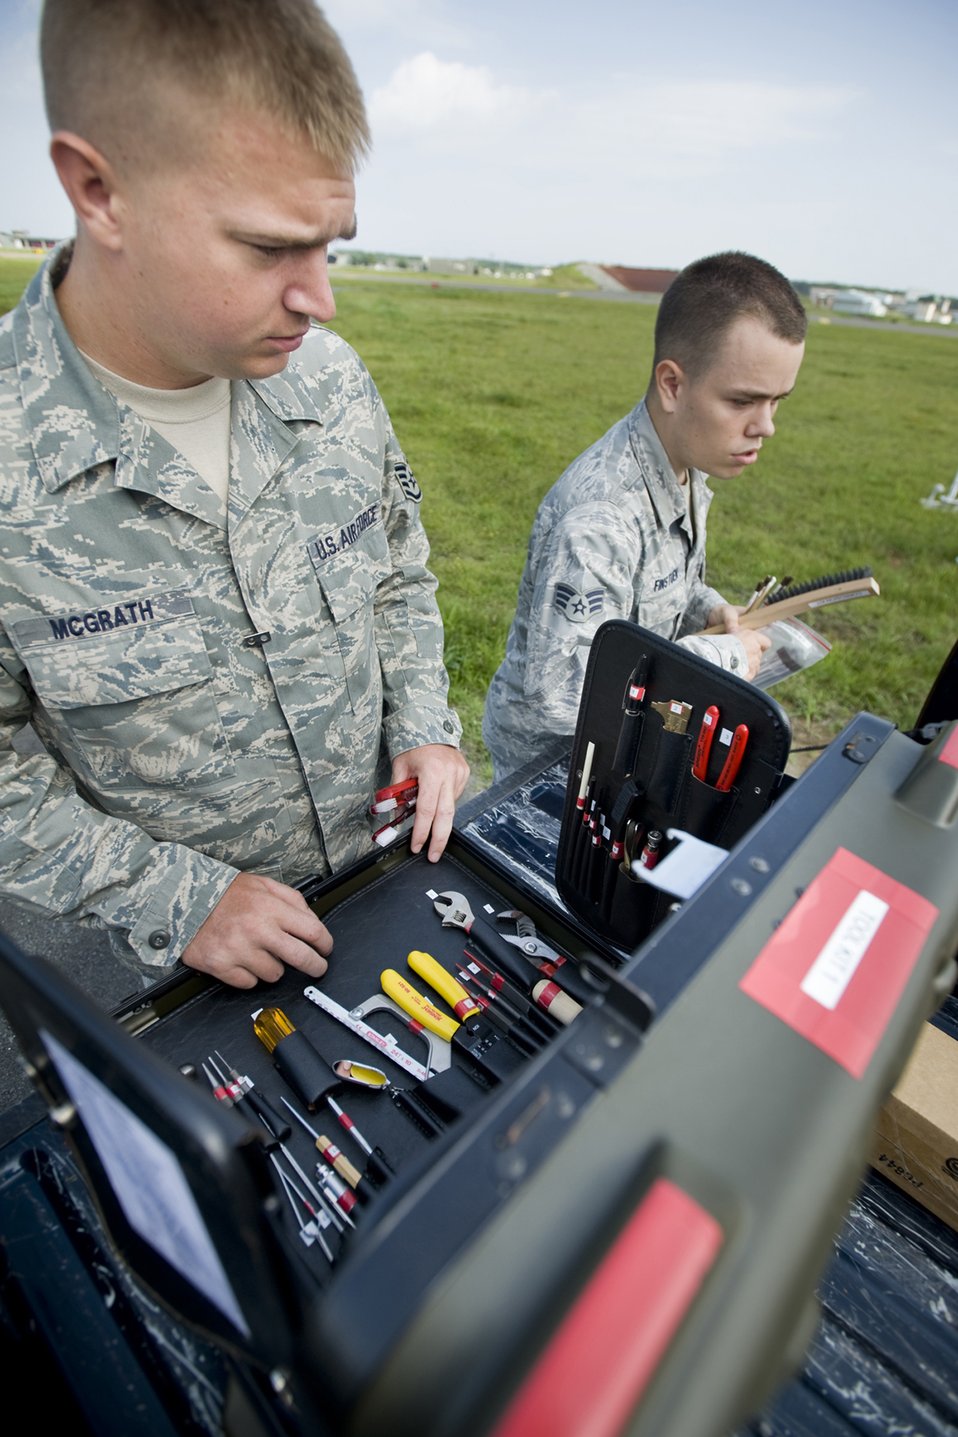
Maintaining an automatic observation system

Staff Sgt. James McGrath (left) and Senior Airman Kevin Finstuen prepare their corrosion kits on the flightline Aug. 17, 2010, at Misawa Air Base, Japan. Sergeant McGrath and Airman Finstuen are airfield systems maintenance technicians with 35th Communications Squadron.